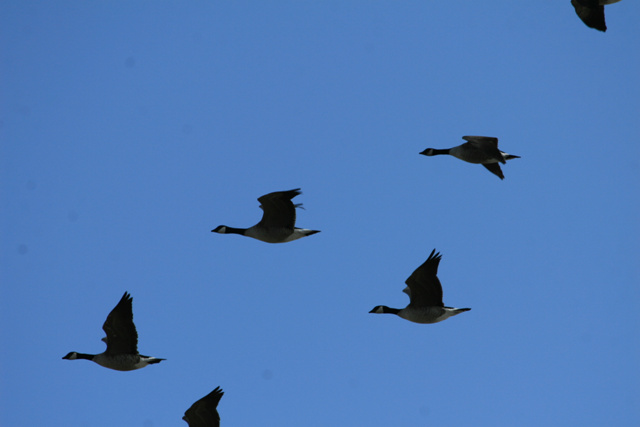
Canada Geese in flight